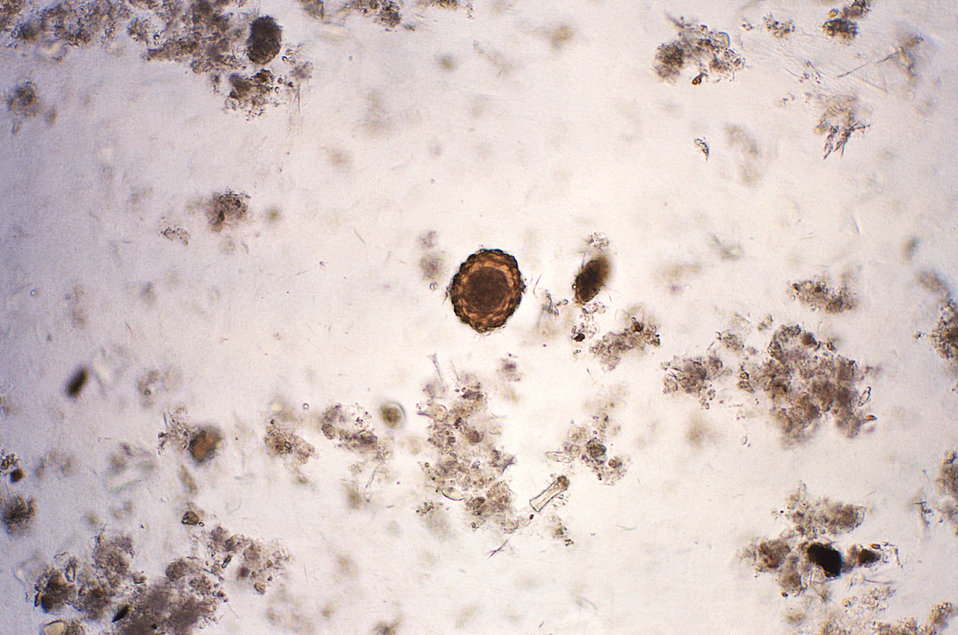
Magnified 128X, this photomicrograph revealed some of the ultrastructural features displayed by a fertile Ascaris lumbricoides egg. A. lumbricoides is the largest nematode (roundworm) parasitizing the human intestine.